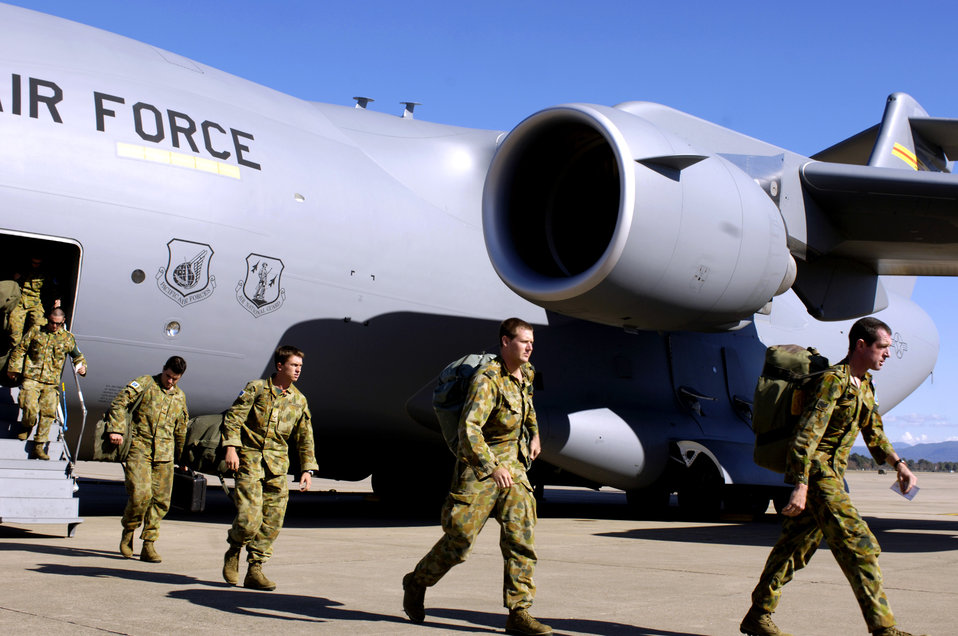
Loadmasters help reposition Australian Defense Forces

Members of the Australian Defense Force disembark from a C-17 Globemaster III at Royal Air Force Base Richmond, Australia, on Sunday, May 28, 2006. Two C-17 Globemaster IIIs and their crews are helping the Australian Defense Force reposition its forces from the Solomon Islands back to Australia to better support peace operations in East Timor.